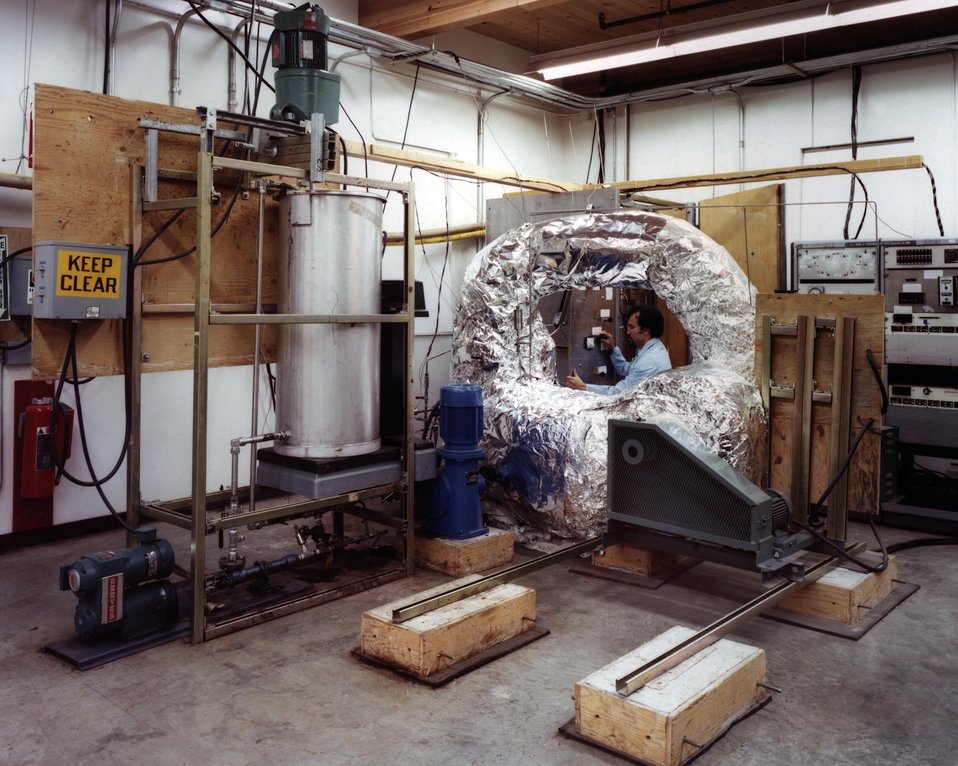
OVERALL VIEW OF THE BIOMASS LIQUEFACTION PROCESS EVALUATION UNIT.

THE PROCESS EVALUATION UNIT IS USED TO TEST VARIOUS METHODS OF CONVERTING BIOMASS INTO FUEL OIL. ONE OF THE LIQUEFACTION METHODS INVOLVES REACTING THE BIOMASS WITH CARBON MONOXIDE AND HYDROGEN UNDER HIGH TEMPERATURES AND PRESSURES IN THE PRESENCE OF CATALYSTS.